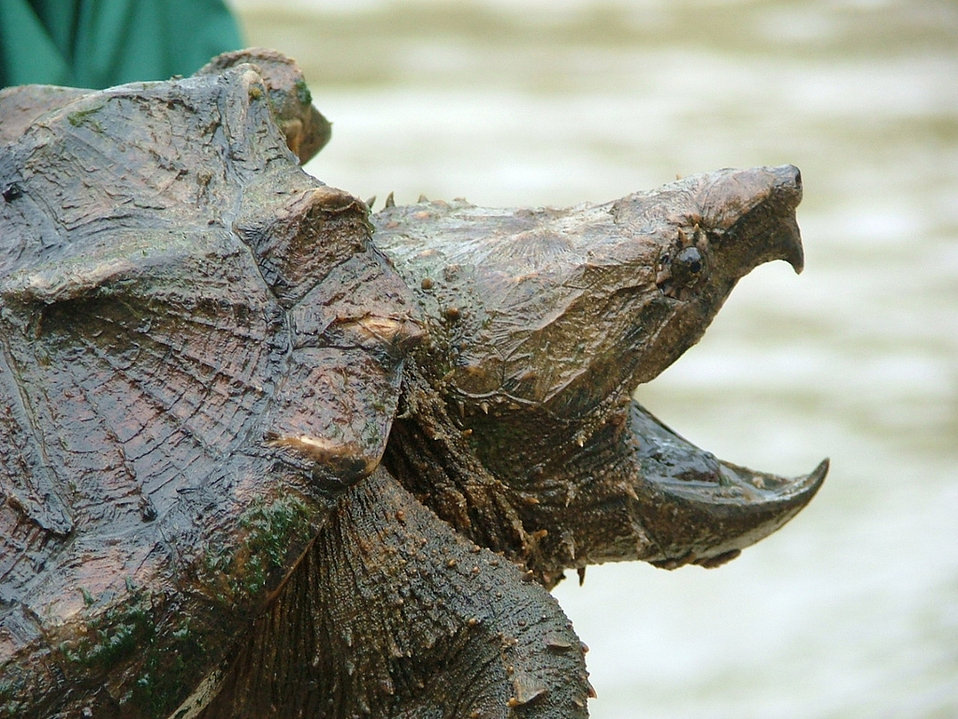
alligator snapping turtle

Cahaba River National Wildlife Refuge, AL